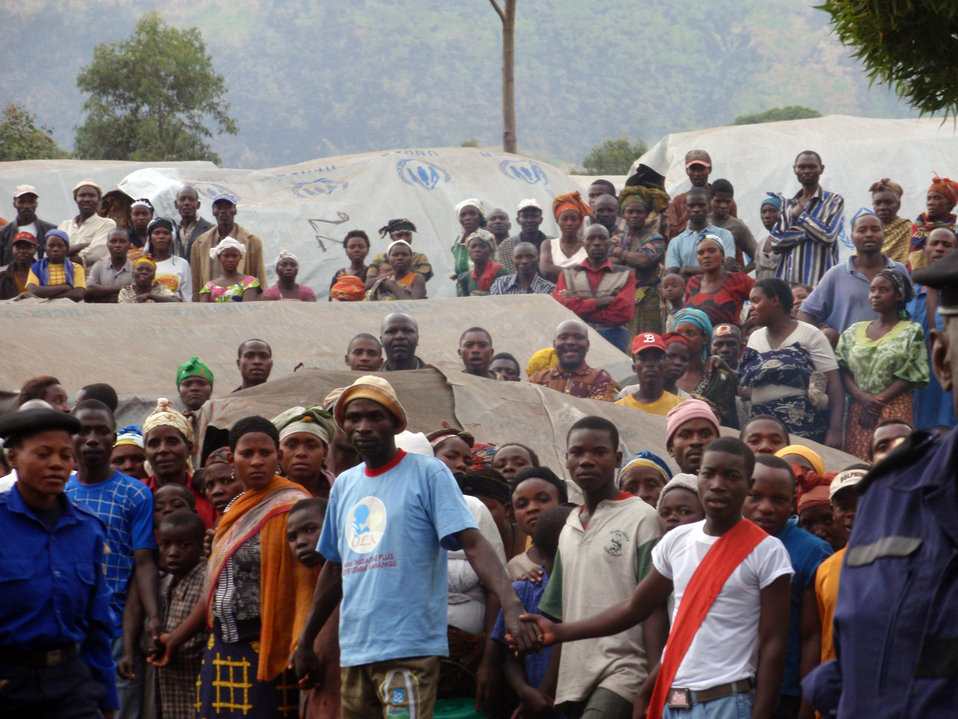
Behind the Scenes: Mugunga IDP Camp

The scene during the arrival of U.S. Secretary of State Hillary Rodham Clinton at the Mugunga Internally Displaced Person (IDP) Camp in Goma, Democratic Republic of Congo August 11, 2009.